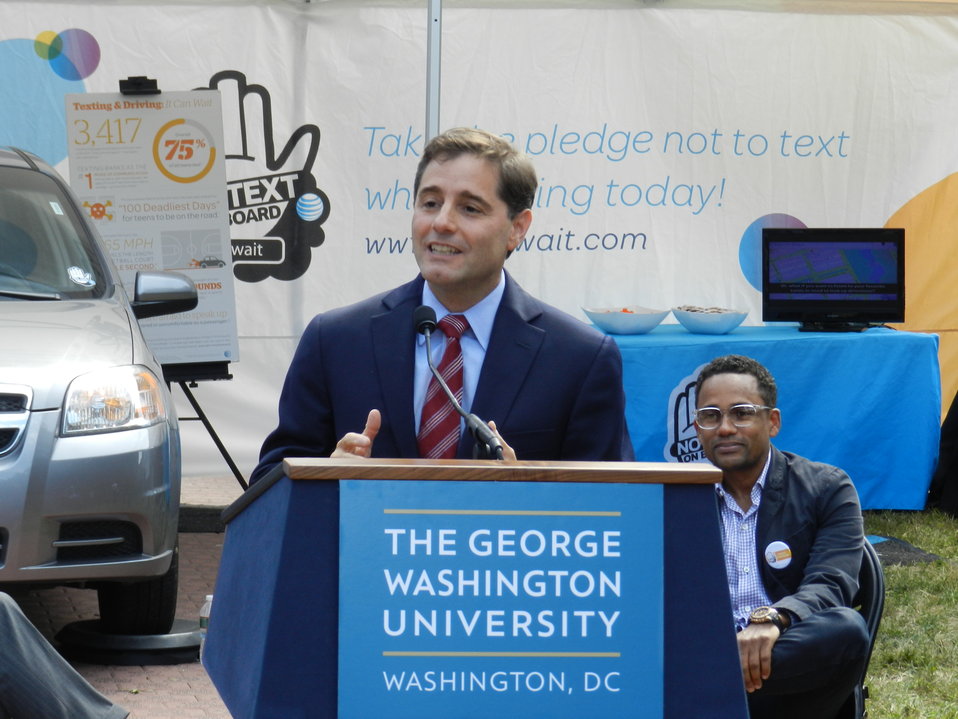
It Can Wait Pledge Day 9.19.12

Chairman Genachowski speaking at the ‘No Text On Board’ Pledge Day Event, The George Washington University, Washington, D.C. September 19, 2012